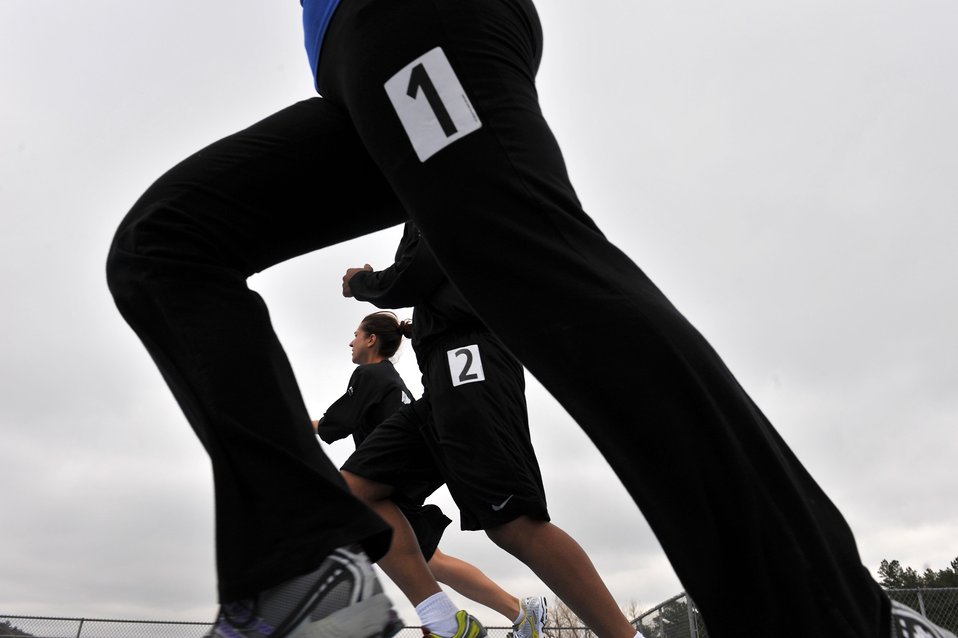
Warrior Games AF track and field

Athletes compete in the track and field events during the Warrior Games at the Air Force Academy track in Colorado Springs, Colo., May 14, 2010.